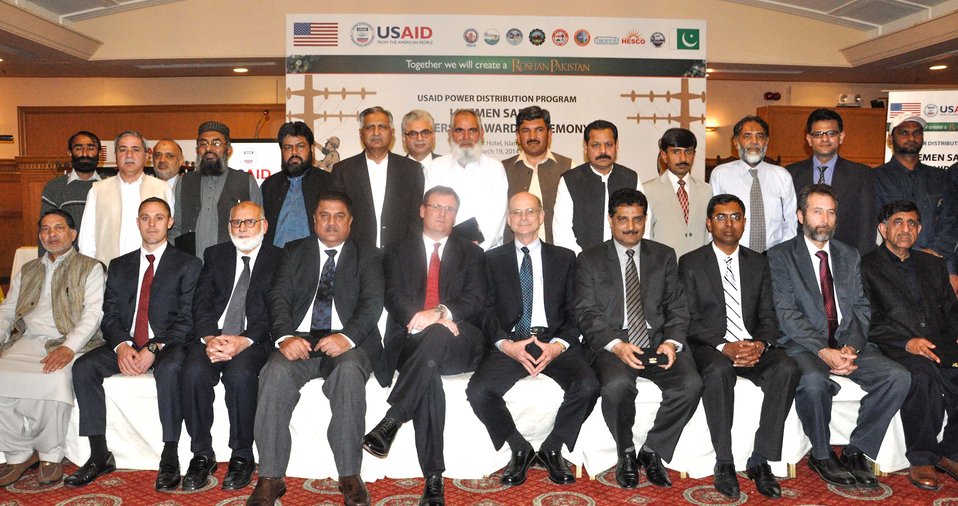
Michael Curtis, Director of USAID Energy Office with Participants of the Training

March 19, 2014